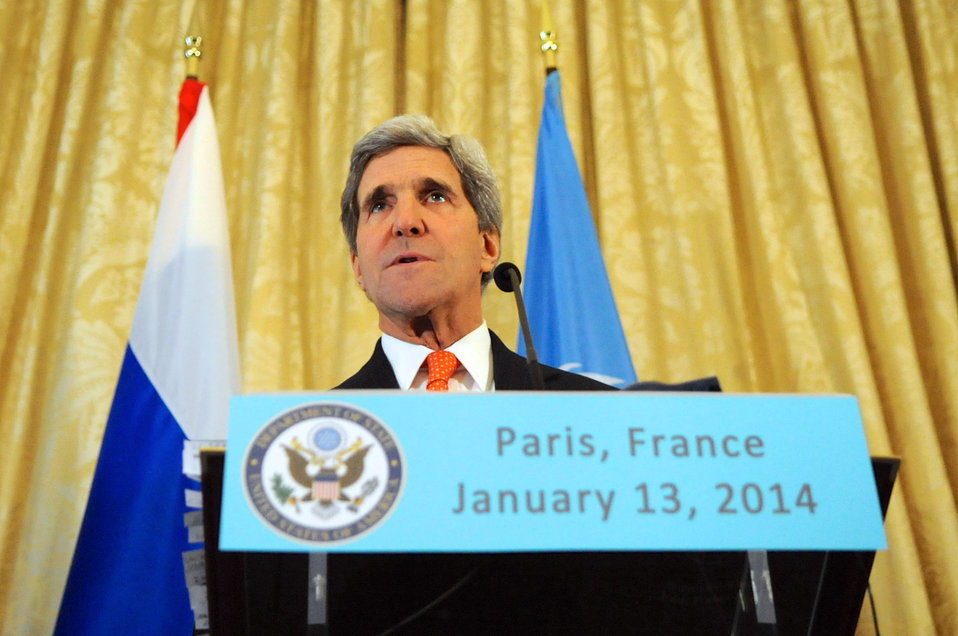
Secretary Kerry Speaks at a Trilateral News Conference

U.S. Secretary of State John Kerry addresses reporters following a three-way discussion with Russian Foreign Minister Sergey Lavrov and United Nations Special Representative for Syria Lakhdar Brahimi in Paris, France, on January 13, 2014.